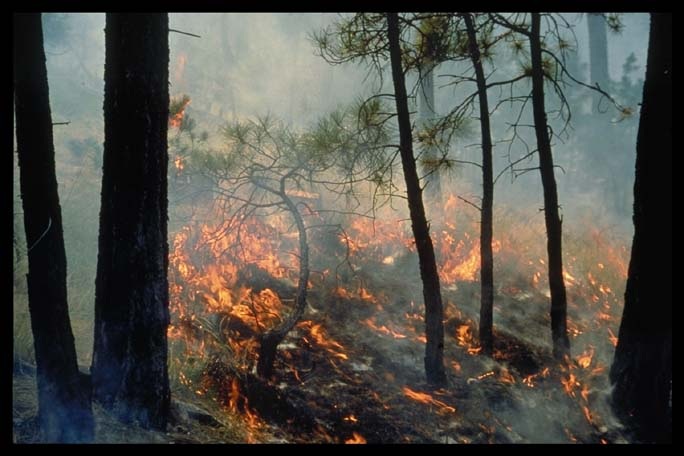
Wildland fire